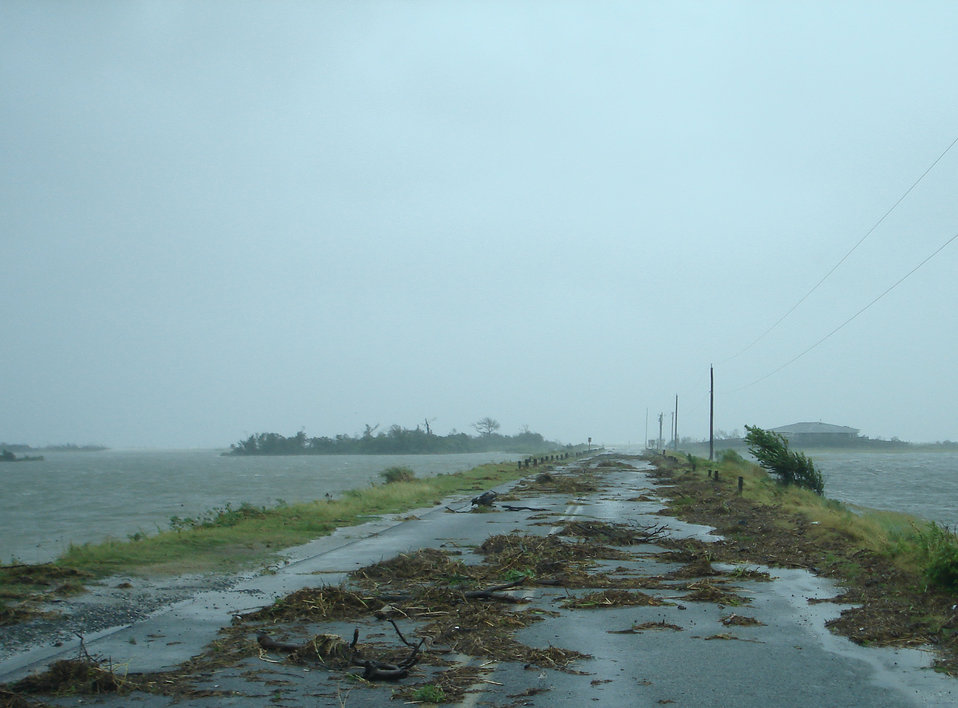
Debris on Beach Road at Chincoteague National Wildlife Refuge in Virginia after Hurricane Irene.